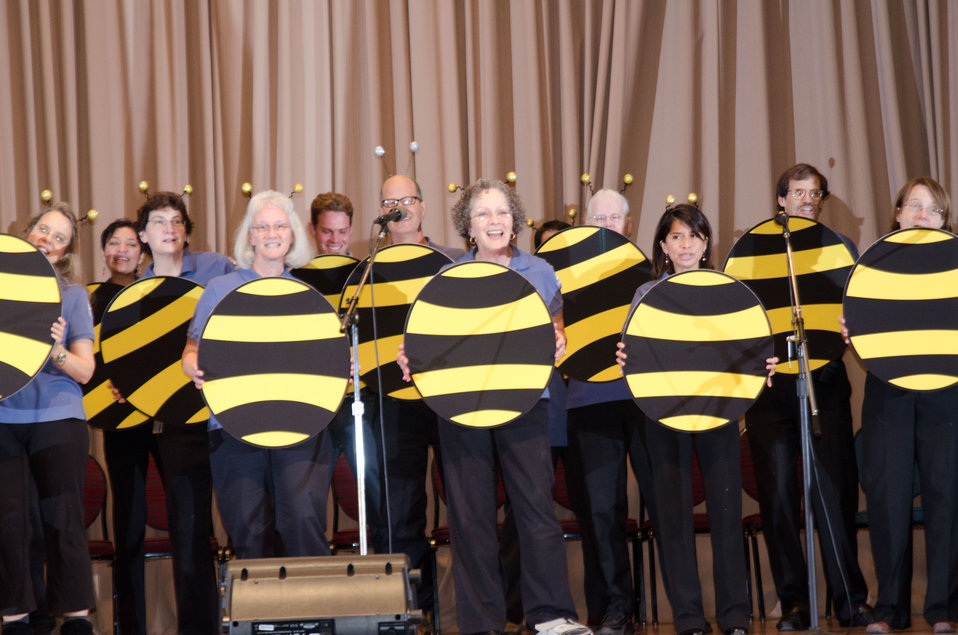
Graduation day of the 2011 U.S. Department of Agriculture (USDA) Executive Master Gardeners, on Tuesday, November 8, 2011 in Washington, DC. During the past six-weeks, students contributed 40-hours of volunteer time, completed studies and testing to receive their certificates today as an Executive Master Gardener. Many of the sessions occurred before work hours, during lunchtime or at community garden project sites such as Powell Middle School. USDA challenges its employees to establish People's Gardens at USDA facilities worldwide or in community gardens. People's Gardens vary in size and type, but all have a common purpose - to help the community and the environment. To learn about the People’s Garden Initiative visit www.usda.gov/wps/portal/usda/usdahome?contentid=peoples g....